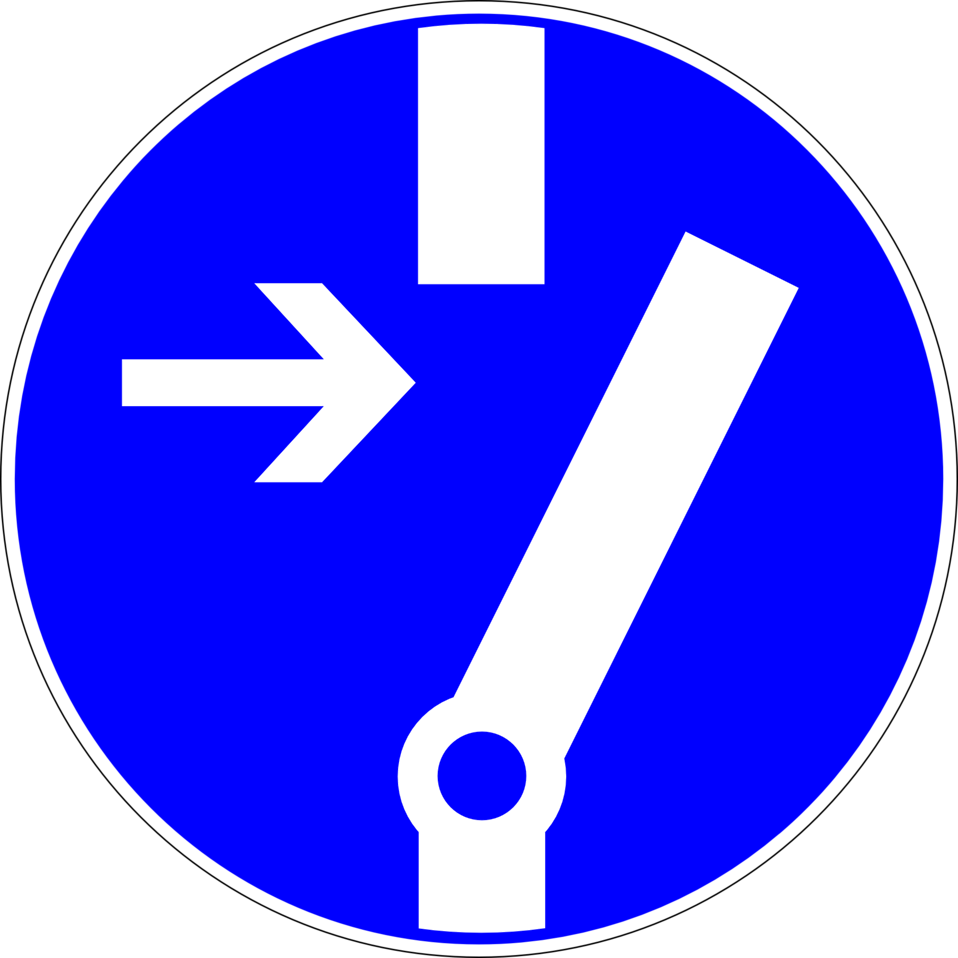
Deutsch: Vor Arbeiten freischalten, Gebotszeichen D-M014 nach DIN 4844-2